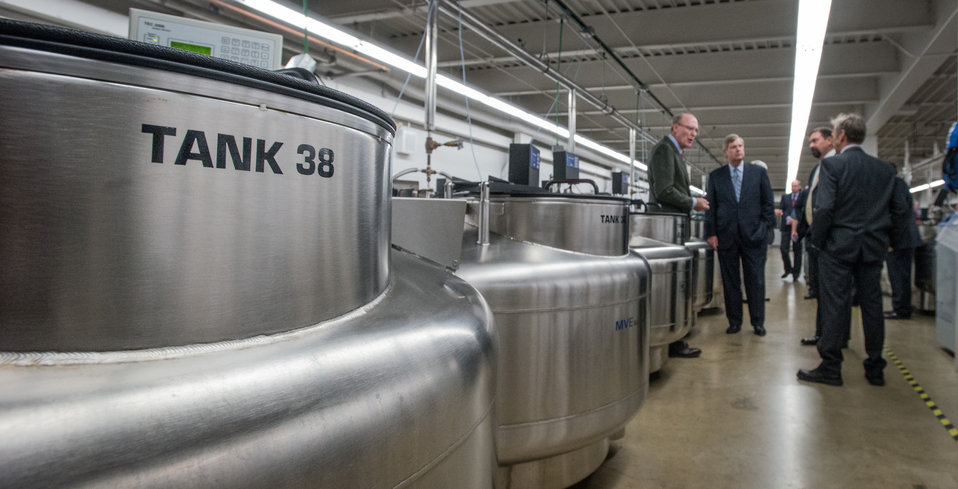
Agriculture Secretary Tom Vilsack tours the Cryogenic Storage Vault at the U.S. Department of Agriculture's (USDA) Agriculture Research Service (ARS) National Center for Genetic Resources Preservation (NCGRP) in Ft. Collins, CO on Wednesday, Nov. 6, 2013. The vault stores 45-50 cryogenic tanks hold hold animal germplasm, plant tissue culture, and seeds that are stored at -196 °C (-321 °F) in liquid storage or to -193 °C (-315 °F) in vapor storage. NCGRP is the largest agricultural gene bank facility in the U.S. The NCGRP staff conducts groundbreaking research to develop more efficient and effective means for preserving plant and animal germplasm, and for better understanding the genetic structure of these invaluable materials. The research findings, preservation techniques, and specialized technology developed by the NCGRP have been adopted by gene banks around the world: many international scientists travel to the NCGRP for research and training.